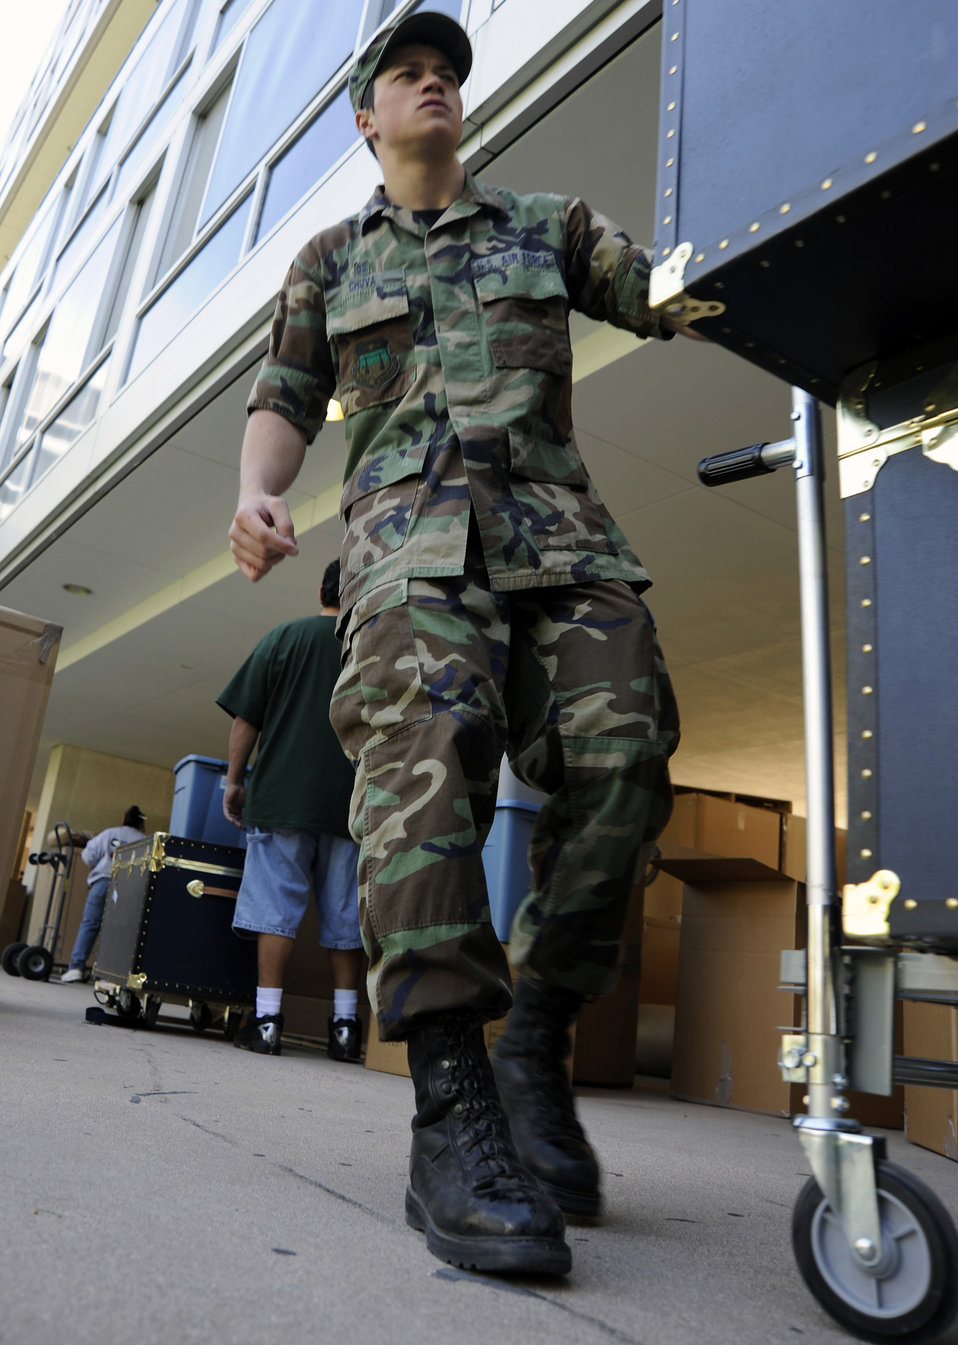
Move out!

Senior Cadet Dean Chuva moves his baggage to a staging area near Sijan Hall at the Air Force Academy in Colorado. As graduation nears, many preparations must be done before being commissioned as a new lieutenant and entering active duty. Cadet Chuva is a member of the graduating class of 2009.